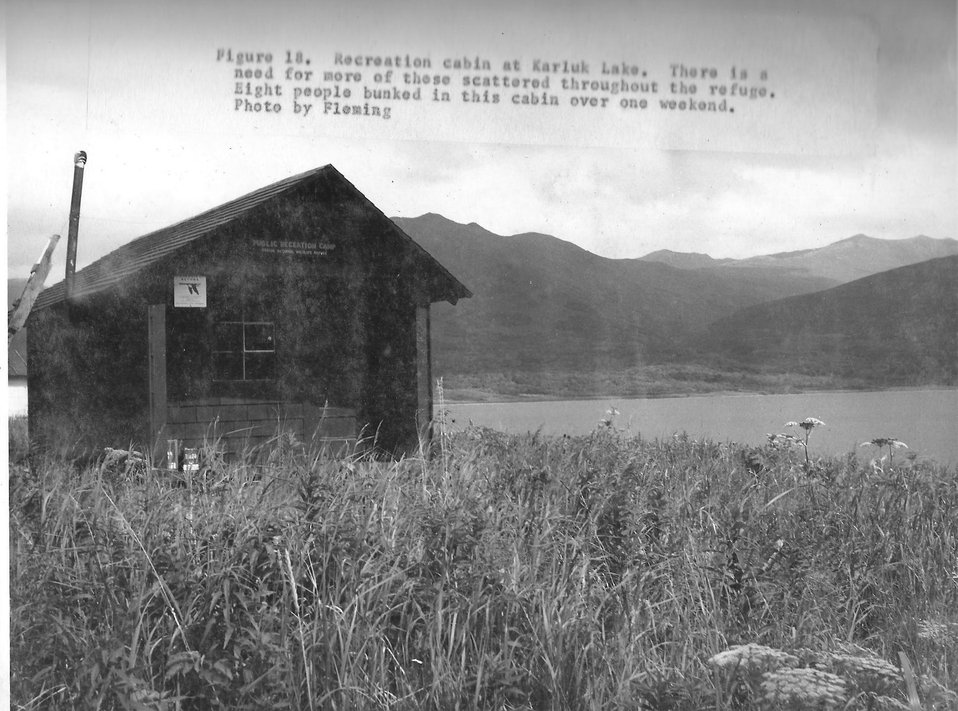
(1964) More Public Use Cabins Needed

Credit: USFWS

Source and Contact: Kodiak National Wildlife Refuge